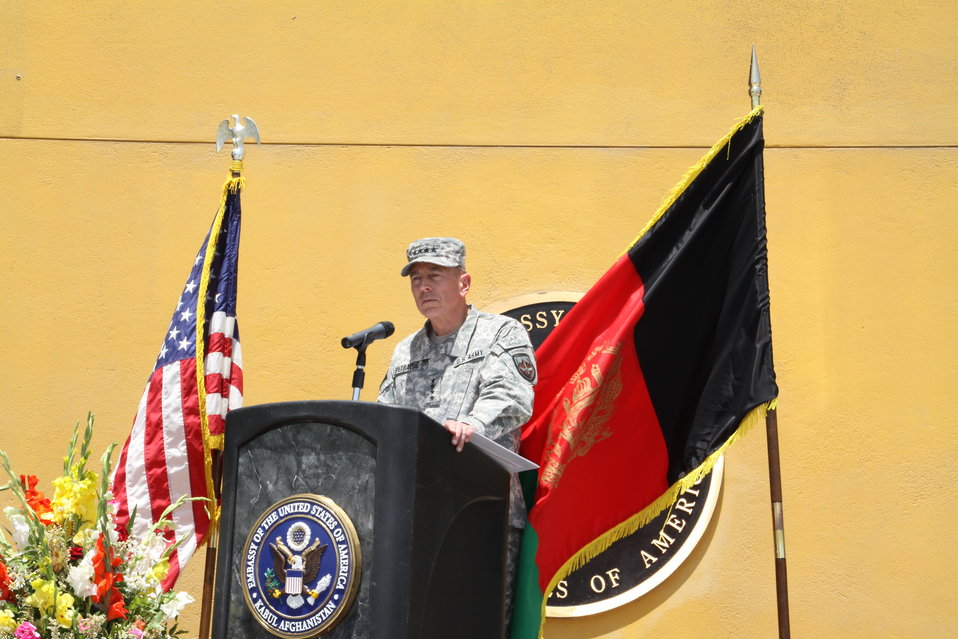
Kabul Official July 4th Celebration